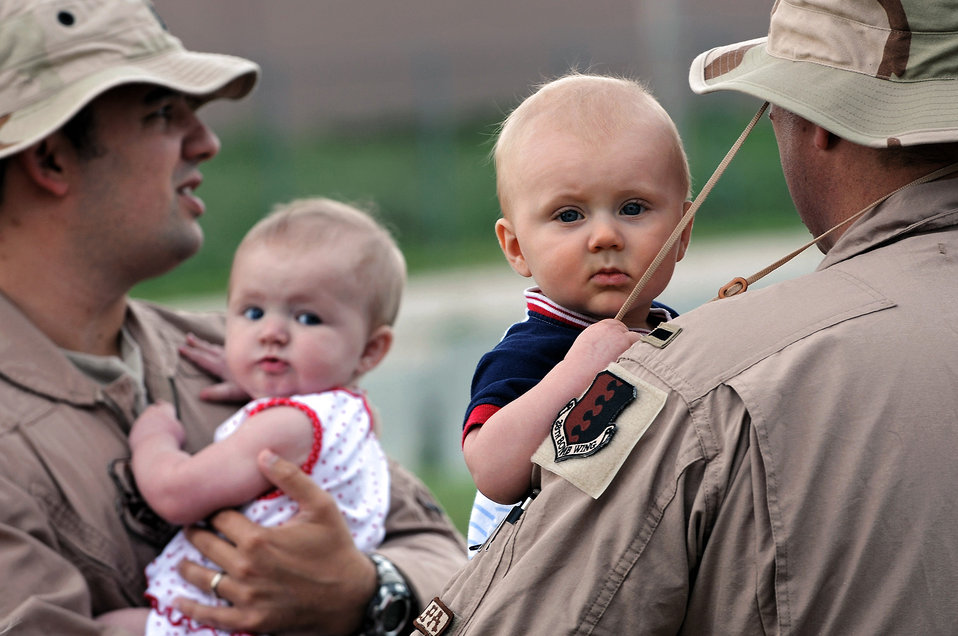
Parting is such sweet sorrow

Capt. Steven Fowler (left) and 1st. Lt Daniel Silk hold their children before deploying July 22 at Ellsworth Air Force Base, S.D. Captain Fowler, a 34th Bomb Squadron weapons system operator, and Lieutenant Silk, a 34th Bomb Squadron B-1B Lancer pilot, will be deployed to Southwest Asia in support operations Iraqi Freedom and Enduring Freedom.